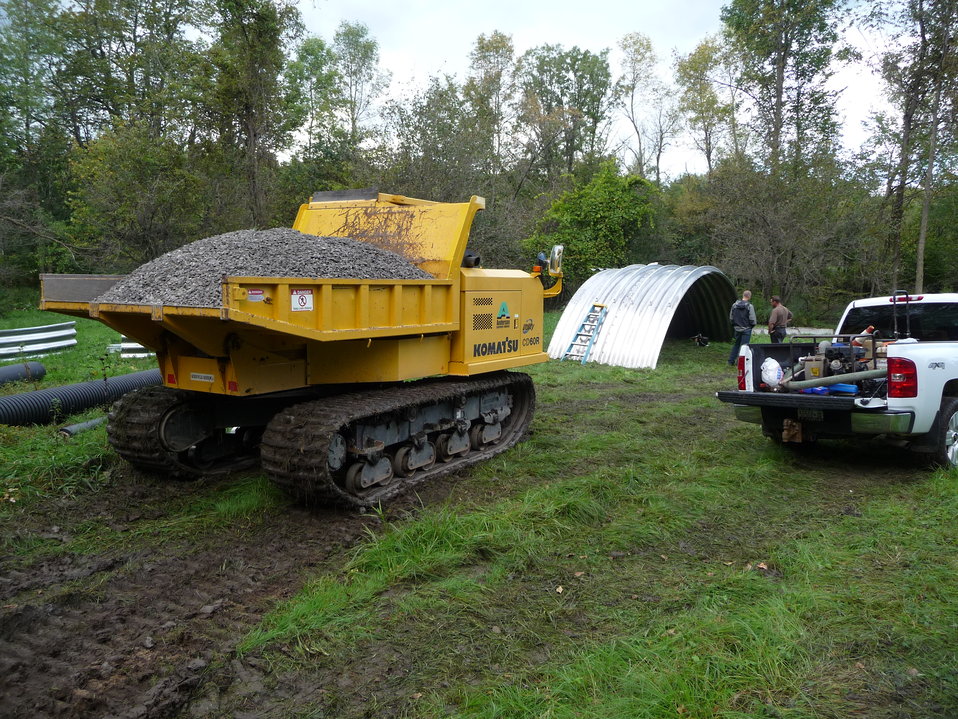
Little Sucker Brook: Preparing for project construction

The stream crossing was removed and replaced with a metal bottomless arch and a concrete foundation to simulate a natural stream bottom and ease fish passage.